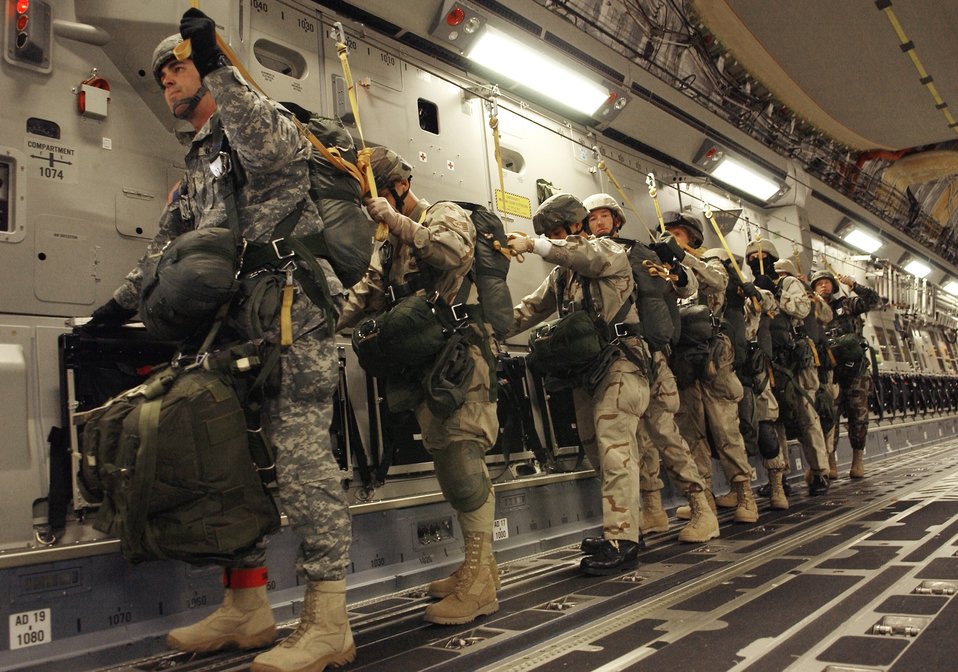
Mission Employment Exercise 06

Nellis Air Force Base 820th Civil Engineering Red Horse personnel and Army Airborne members prepare to exit a C-17 Globemaster III Dec.8, during a Mission Employment Exercise held at Nellis. Nearly 80 aircraft from both the Air Force and Navy will participate in the nearly two-week event. ME Phase is the final stage of a five-and a- half month course, which trains students in their specialties. Mission Employment is the final event prior to Weapons School graduation.